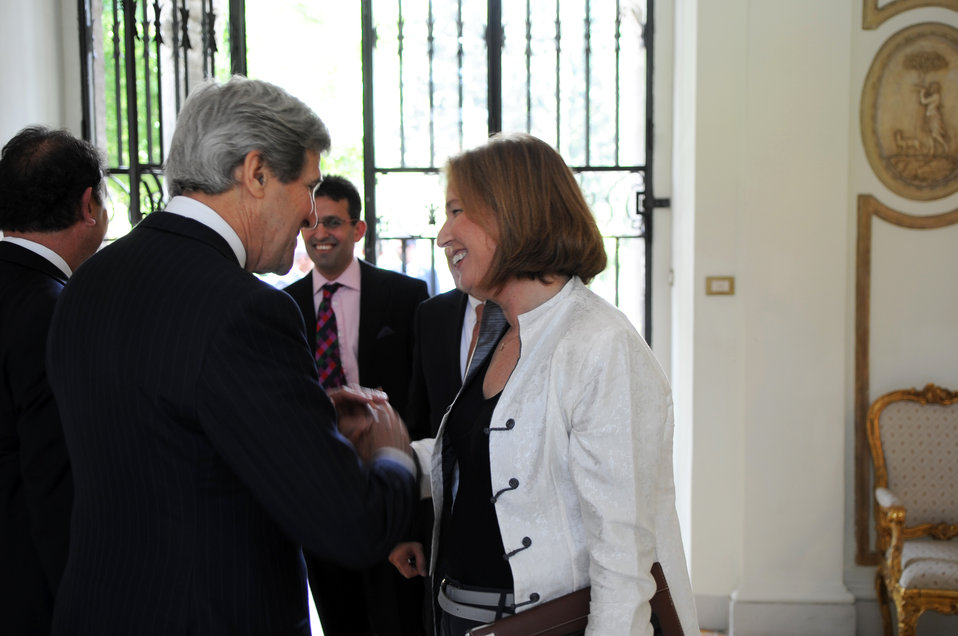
Secretary Kerry Greets Israeli Justice Minister Livni

U.S. Secretary of State John Kerry greets Israeli Justice Minister Tzipi Livni as she arrives at the U.S. ambassador's residence, the Villa Taverna, in Rome, Italy, for talks focused on securing Middle East peace on May 8, 2013.